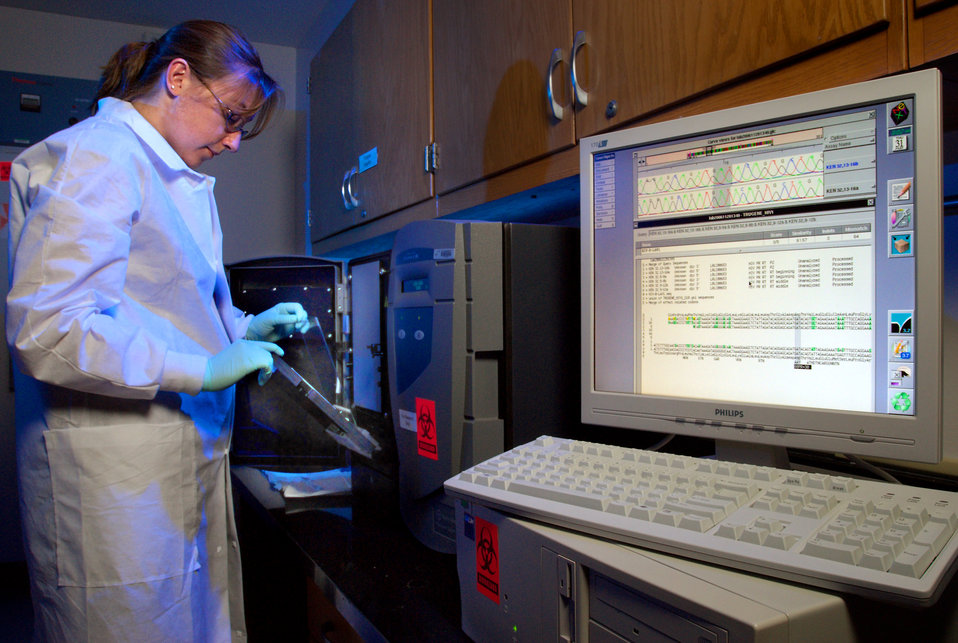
This 2007 photograph depicts CDC contractor Amanda McNulty, as she was performing antiretroviral drug resistance testing on patient specimens using the Siemens Trugene� System, which uses proprietary 'CLIP' sequencing chemistry, in order to sequence HIV, HBV and HCV DNA.Amanda is a National Center for HIV/AIDS, Viral Hepatitis, STD, and TB Prevention (NCHHSTP) staff member, who works inside the center's Global AIDS Program's (GAP) International Laboratory Branch (ILB).